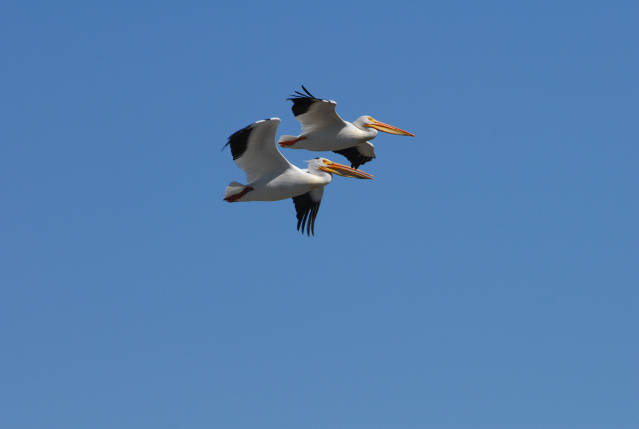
American white pelicans in flight